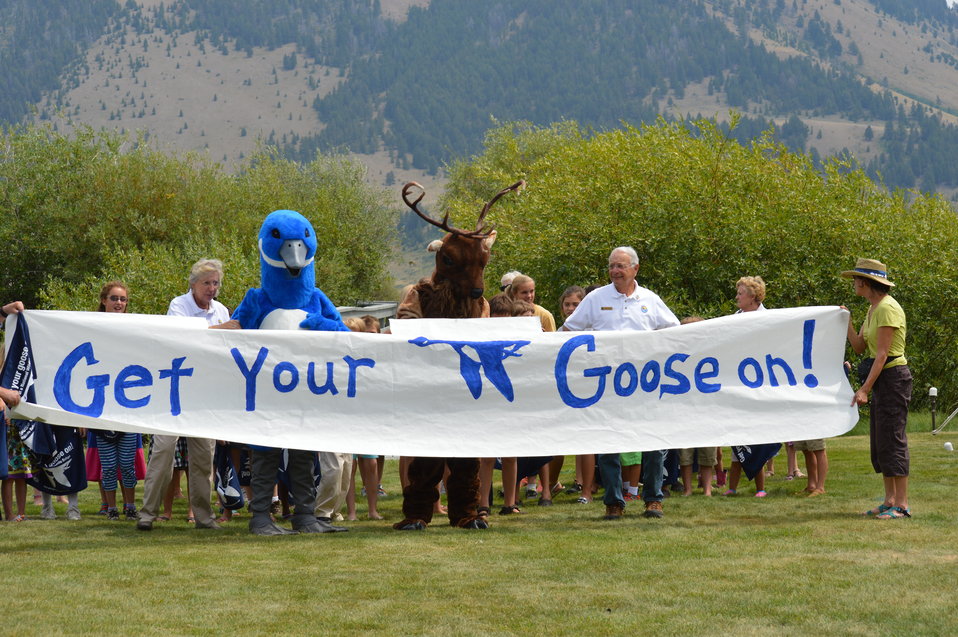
Get Your Goose On! - National Elk Refuge Style

On August 10, 2012 the U.S. Fish and Wildlife Service and Partners celebrated the 100 year anniversary of the establishment of the National Elk Refuge. In these photos, young attendees, along with Puddles the Blue Goose and the National Elk Refuge's mascot, showed us how to Get Your Goose On! with style.